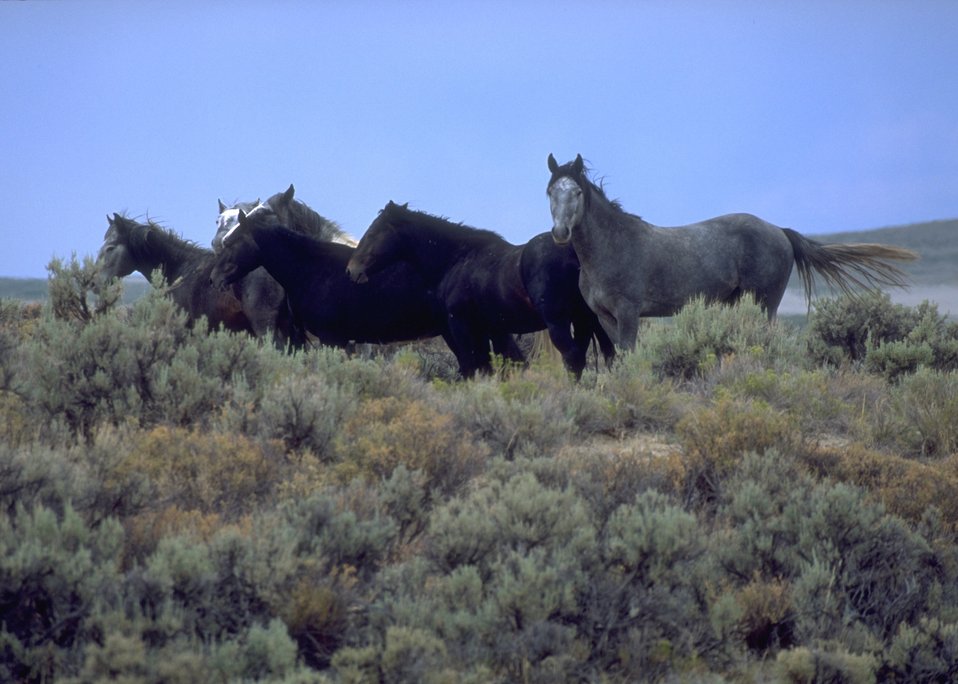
Wild horses, Rock Springs Field Office.